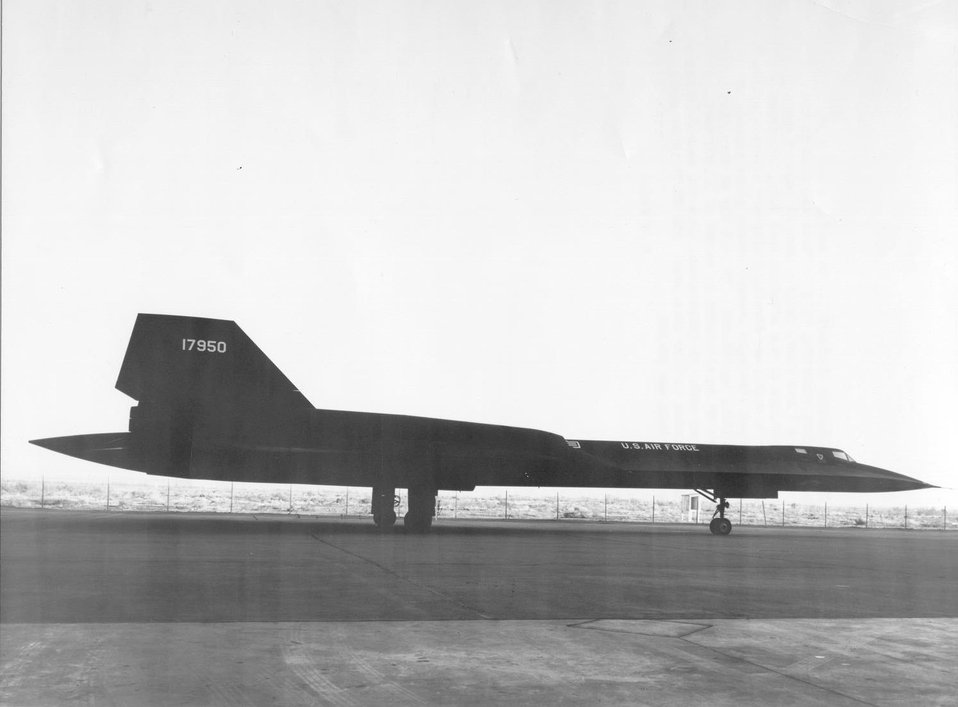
First SR-71A-LO delivered

The first SR-71A-LO delivered was serial number 61-7950.